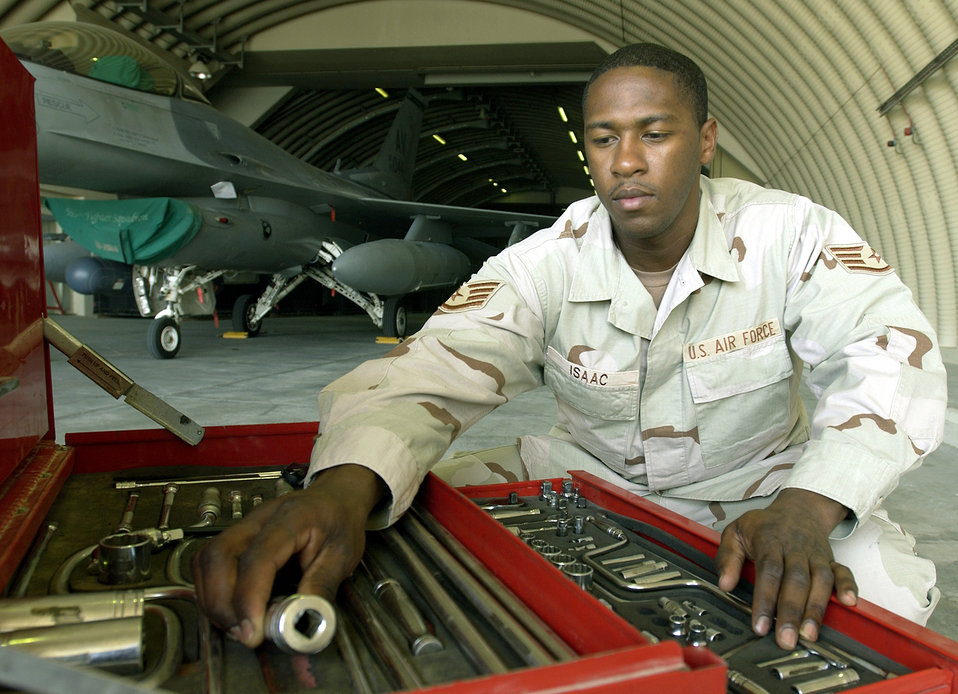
In a fix

SOUTHWEST ASIA -- Staff Sgt. Larry Isaac grabs a tool to fix an aircraft at a forward-deployed location. Sergeant Isaac is assigned to the 555th Expeditionary Fighter Squadron and is deployed from Aviano Air Base, Italy.